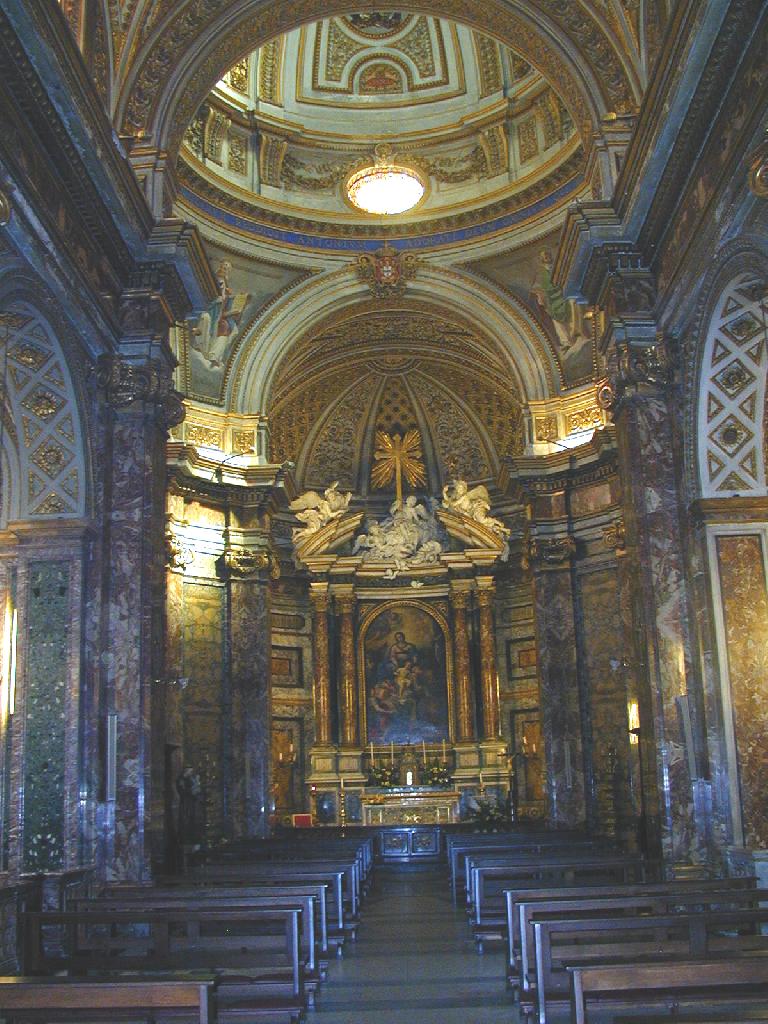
000815 4 s antonio ai portoghesi1